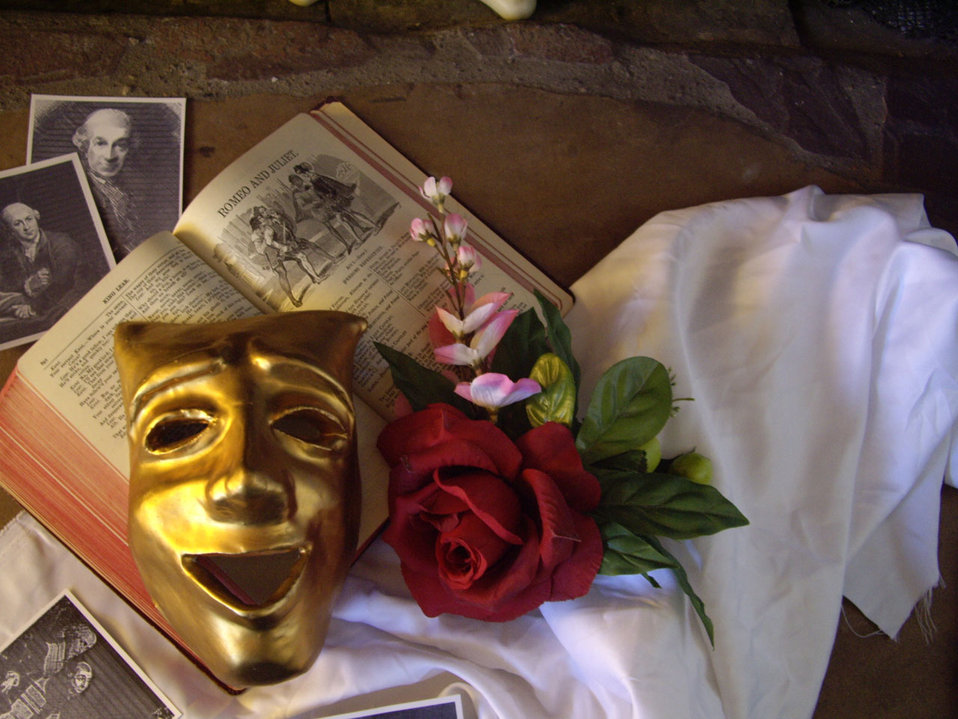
Mask and book

Arrangement for historical romantic comedy.